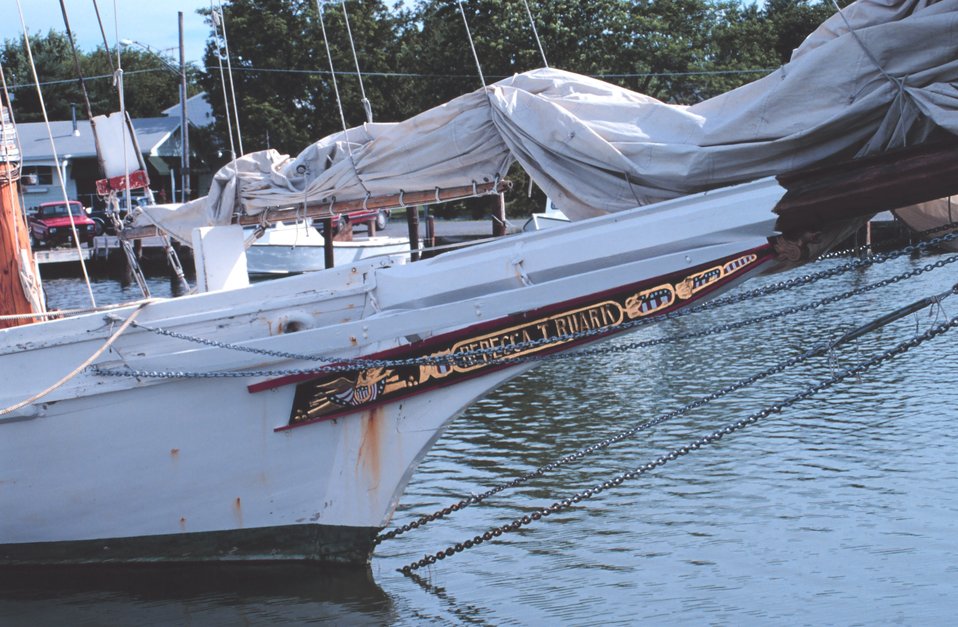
A Chesapeake Bay sailing oyster dredger at the dock.